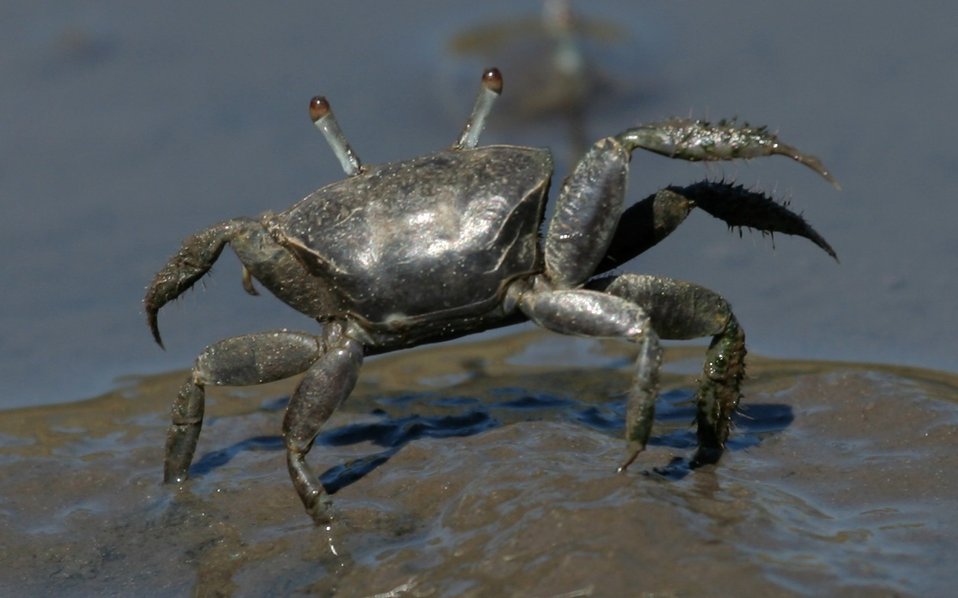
Sand fiddler crab (Uca pugilator) at Pinckney Island National Wildlife Refuge, South Carolina.